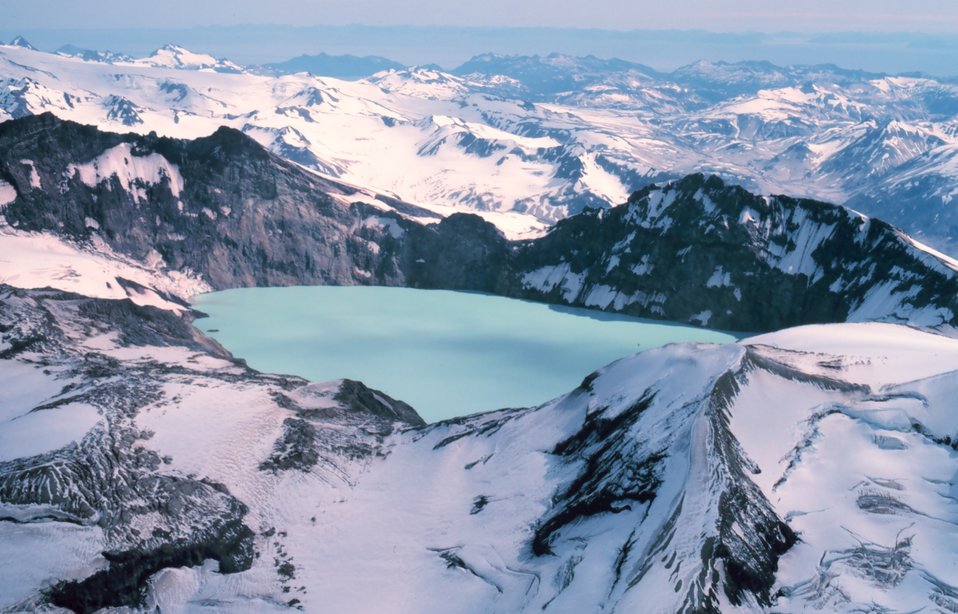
Katmai Crater